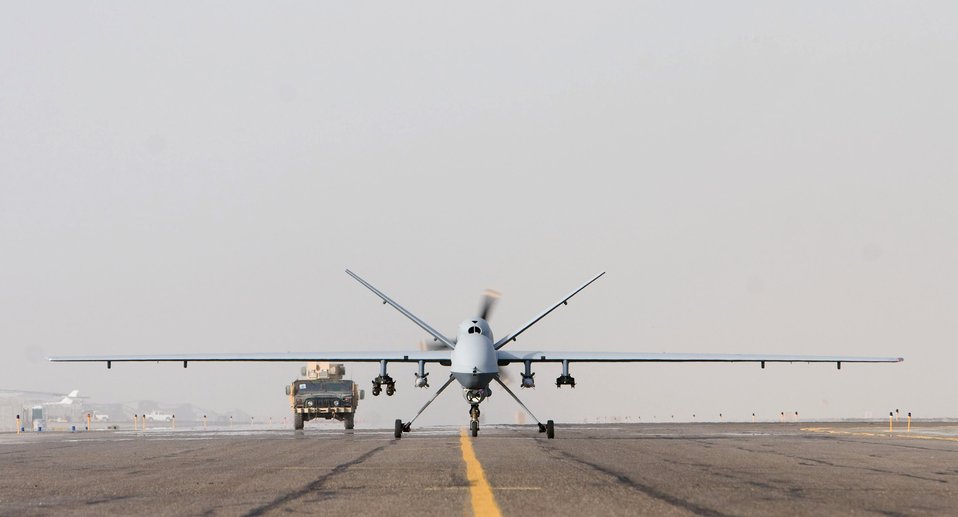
Air Force's hunter-killer UAV now flying in Afghanistan

An MQ-9 Reaper takes off on a mission in Afghanistan Oct. 1. The MQ-9 has nearly nine times the range, can fly twice as high and carries more munitions than the MQ-1 Predator.